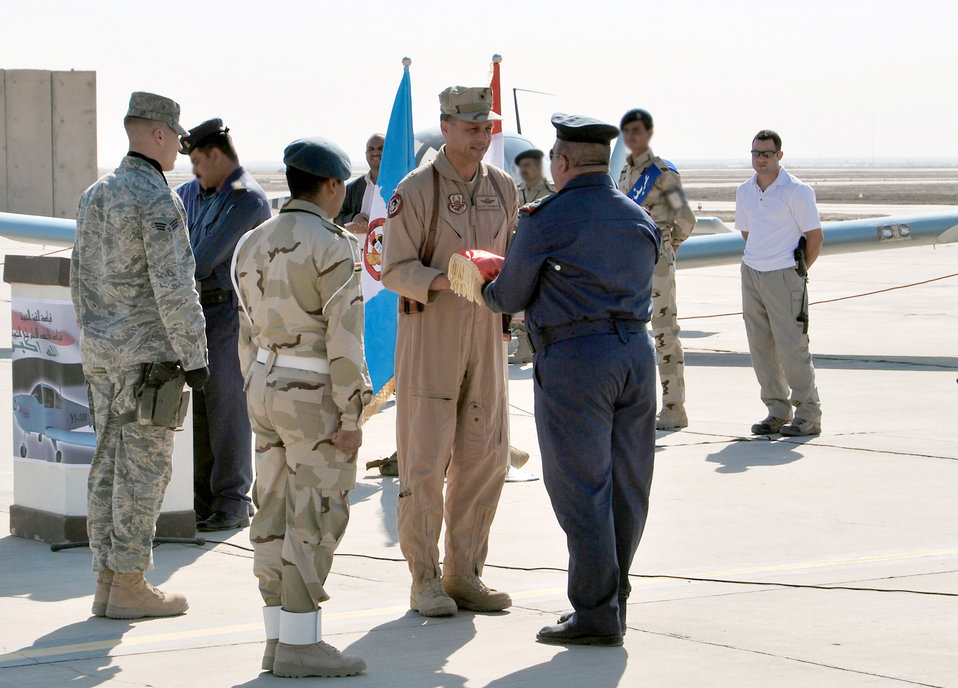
Iraqi air force officials open new facilities at Ali Air Base

Brig. Gen. Scott Hanson exchanges gifts Nov. 23, 2010, at Ali Air Base, Iraq, during a ceremony celebrating the arrival of the Iraqi Air Force's Squadron 70 and the grand opening of a new dining facility. General Hanson is the 321st Air Expeditionary Wing commander and Iraqi Training and Advisory Mission - Air Force director.